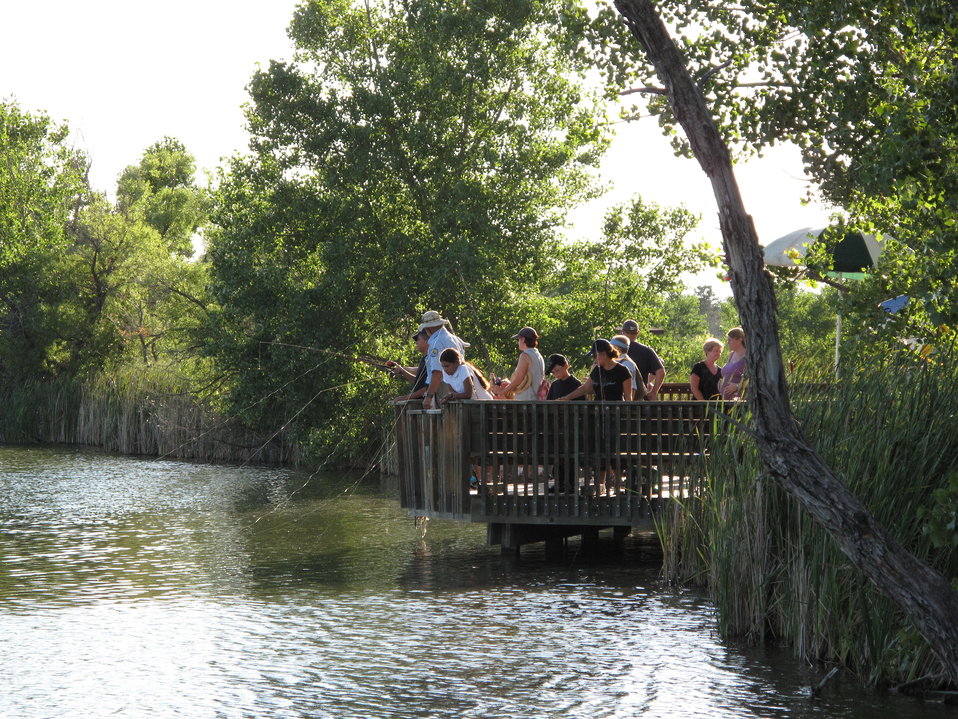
Fishing trip at the Rocky Mountain Arsenal